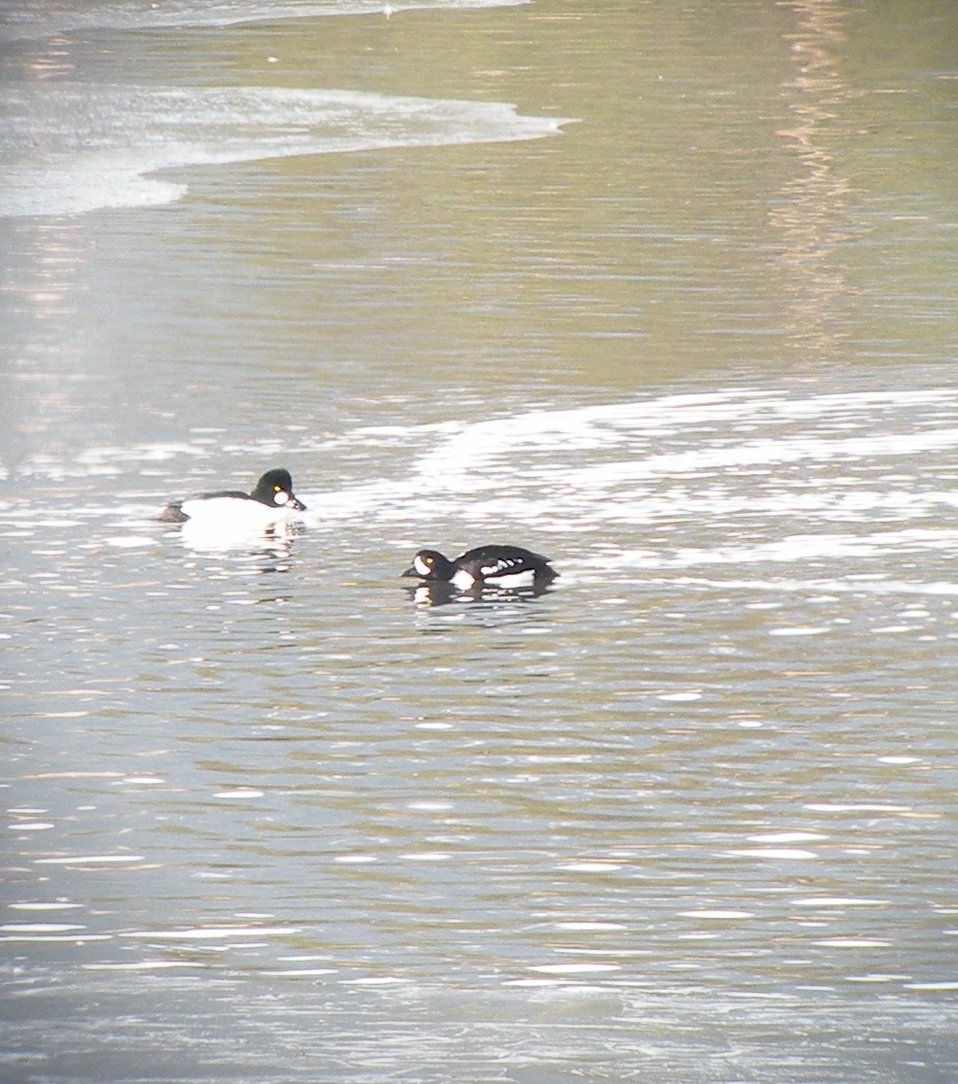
Barrow's and Common Goldeneye

Deb Goslin, refuge Bio Tech, did a waterfowl survey today and found 4 waterfowl species previously unseen in 2011: Barrow's goldeneye, American wigeon, lesser scaup, and bufflehead.

Digiscoped photo taken in 2010.